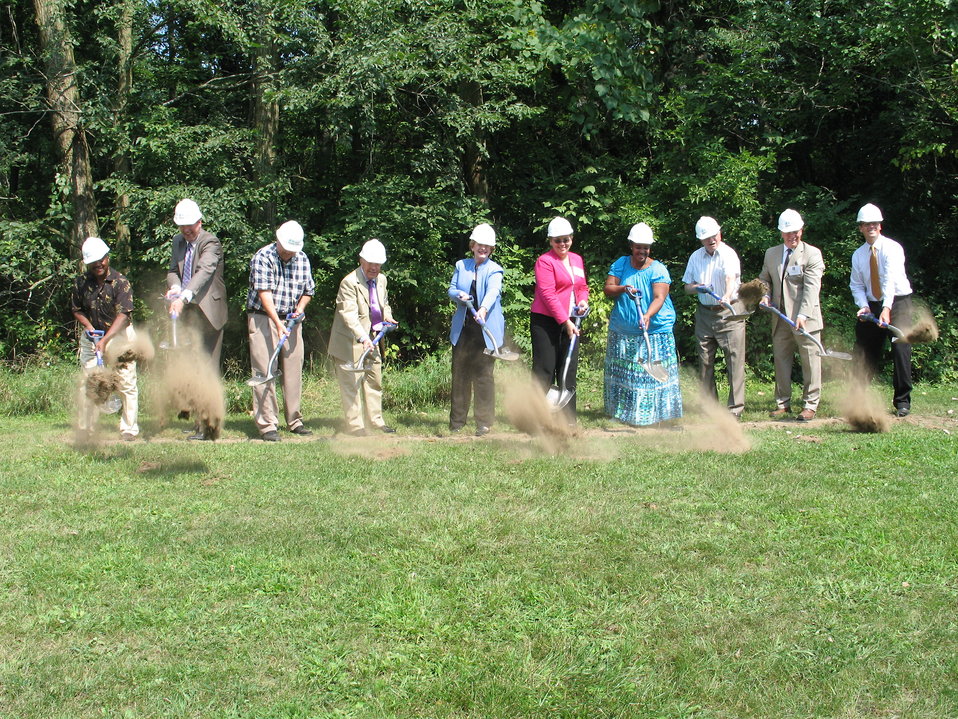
Cassopolis 029

Michigan Senator Debbie Stabenow (sixth from left) joins officials in breaking ground for a new health care facility funded in part by the U.S. Department of Agriculture (USDA).